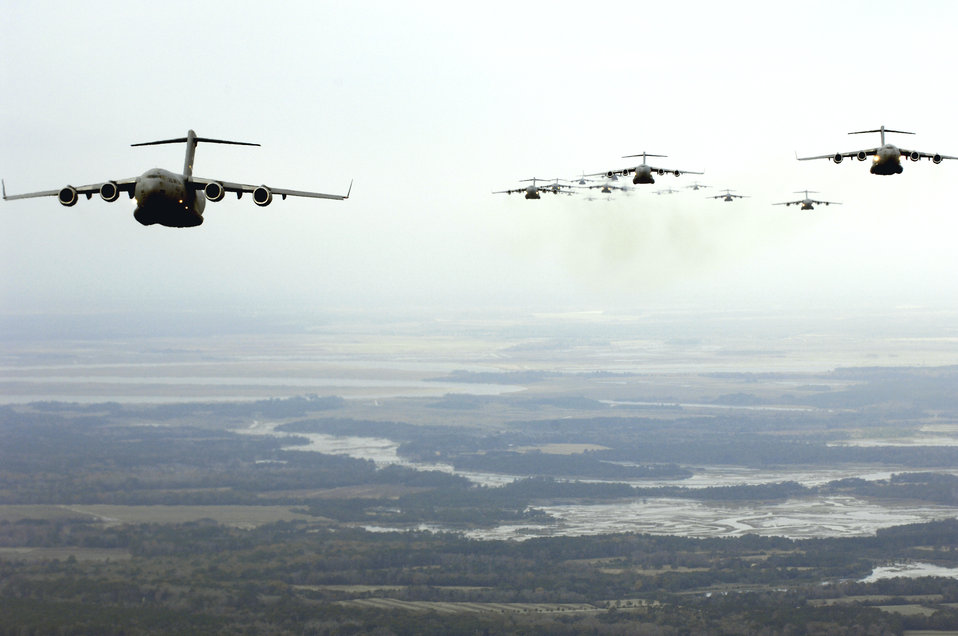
20 Charleston C-17s fill the sky

Several C-17 Globemaster IIIs fly as part of a 20-ship formation Dec. 21 over South Carolina. The C-17s, assigned to the 437th and 315th Airlift Wings at Charleston AFB, were part of the largest formation in history from a single base and demonstrated the strategic airdrop capability of the Air Force.